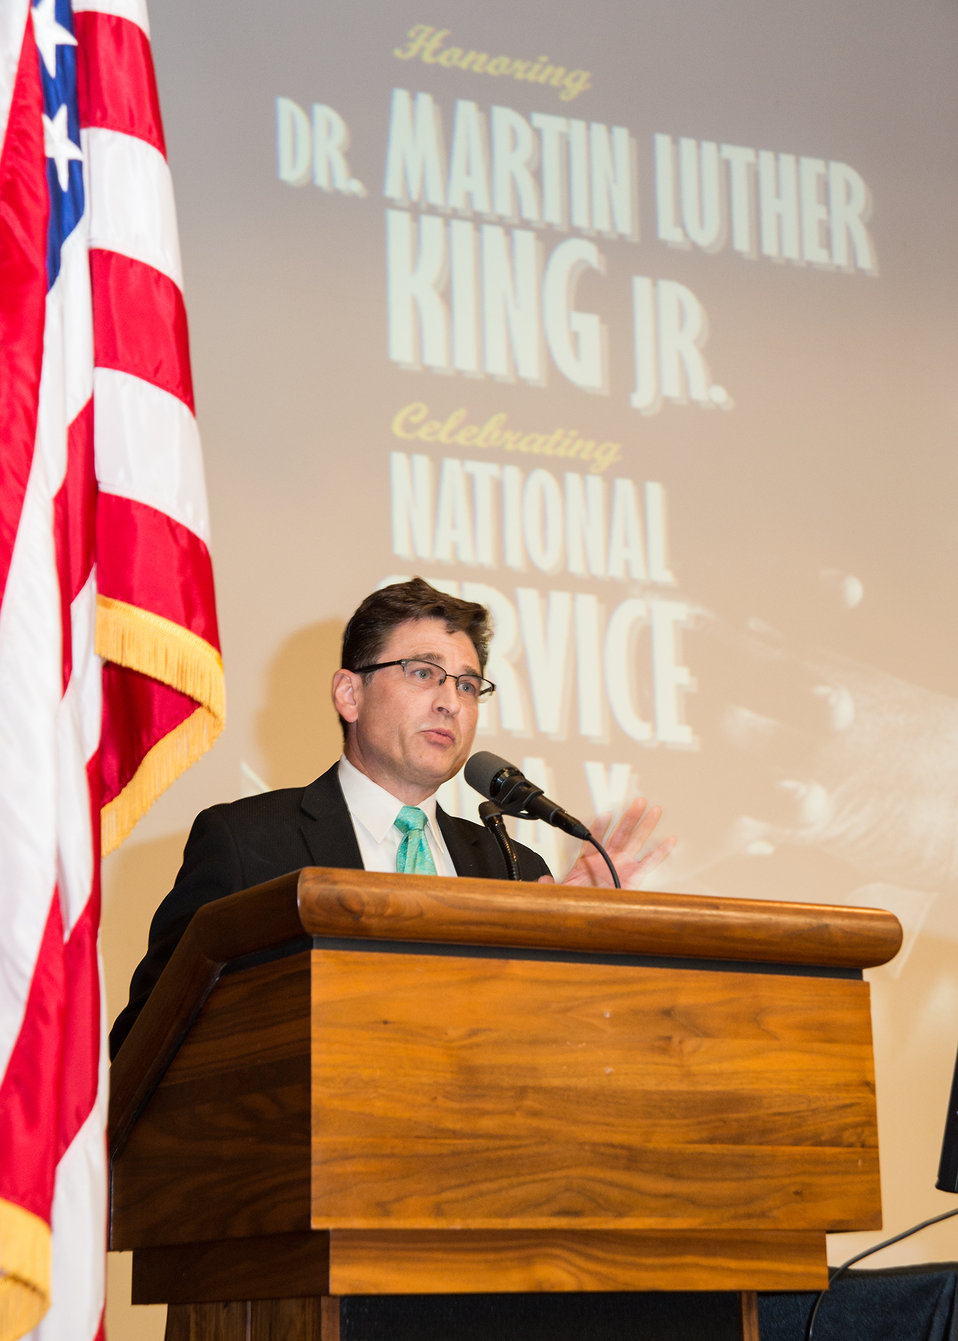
U.S. Department of Agriculture (USDA) Office of the General Counsel (OGC) Principal Deputy General Counsel Frederick Pfaeffle Arana offers closing remarks at USDA's Dr. Martin Luther King Jr. and National Service Day in Washington, D.C. on Wednesday, Jan. 15, 2014.